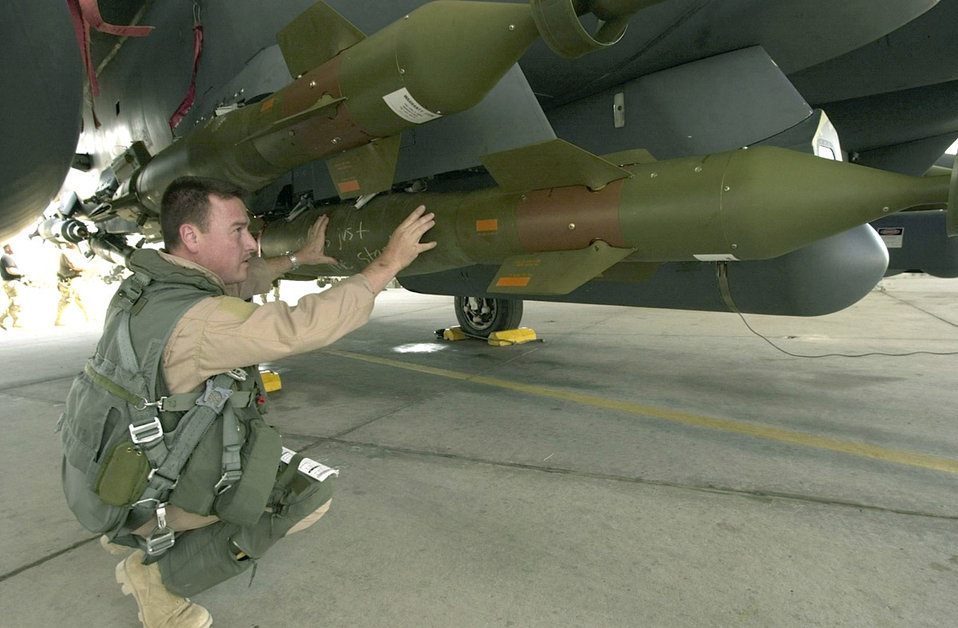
Pugs

OPERATION ENDURING FREEDOM -- Arriving in theater only days before, F-15E Strike Eagles prepare to fly their first bombing missions in support of Operation Enduring Freedom into Afghanistan from a base in Southwest Asia on Oct.17, 2001. Here, the weapon system operator on the flight lead for the mission, call sign